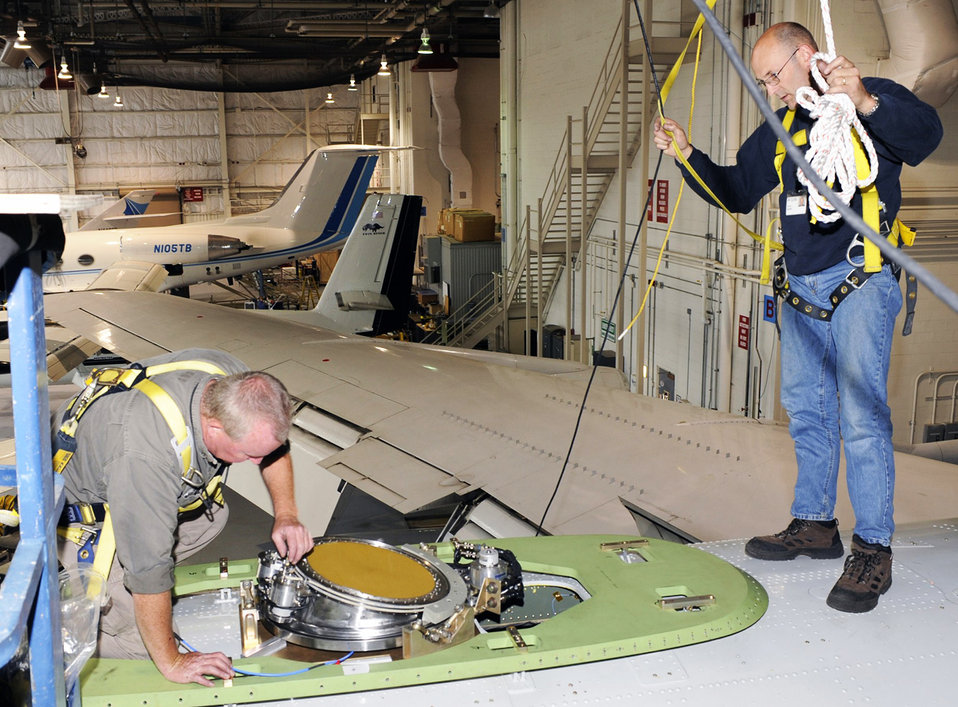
Flight test shows small antenna can do big things

Ken Burkett (left) and Dale Morin install the Advanced Multiband Communications Antenna System antenna on the Paul Revere in the Massachusetts Institute of Technology Lincoln Laboratory Flight Facility Building at Hanscom Air Force Base, Mass. Mr. Burkett and Mr. Morin are aircraft mechanics.